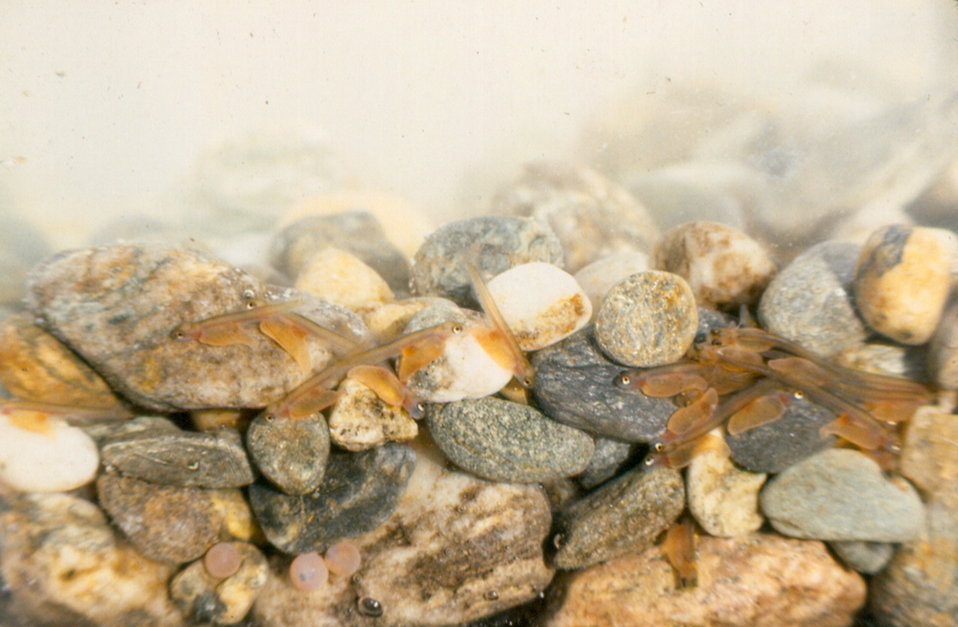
Atlantic salmon sac fry in habitat

Sac fry remain in the gravel habitat of their redd (nest) until their yolk sac, or 'lunch box' is depleted. Once depleted, the young salmon then emerge from the gravel to look for food.